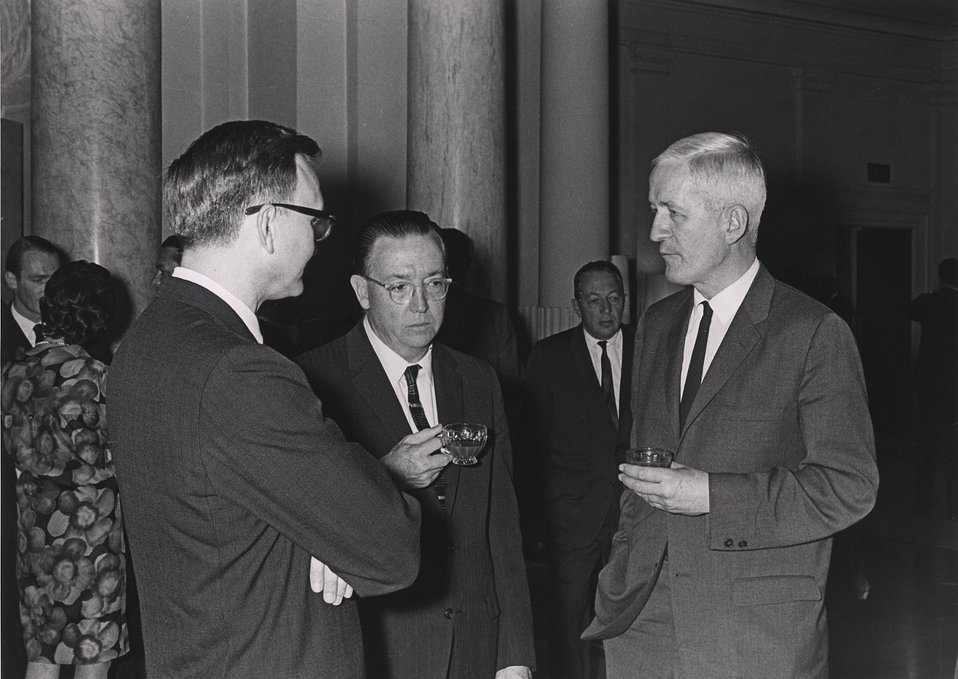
First Lawrence Award Ceremony, in Washington, on June 27, 1960.